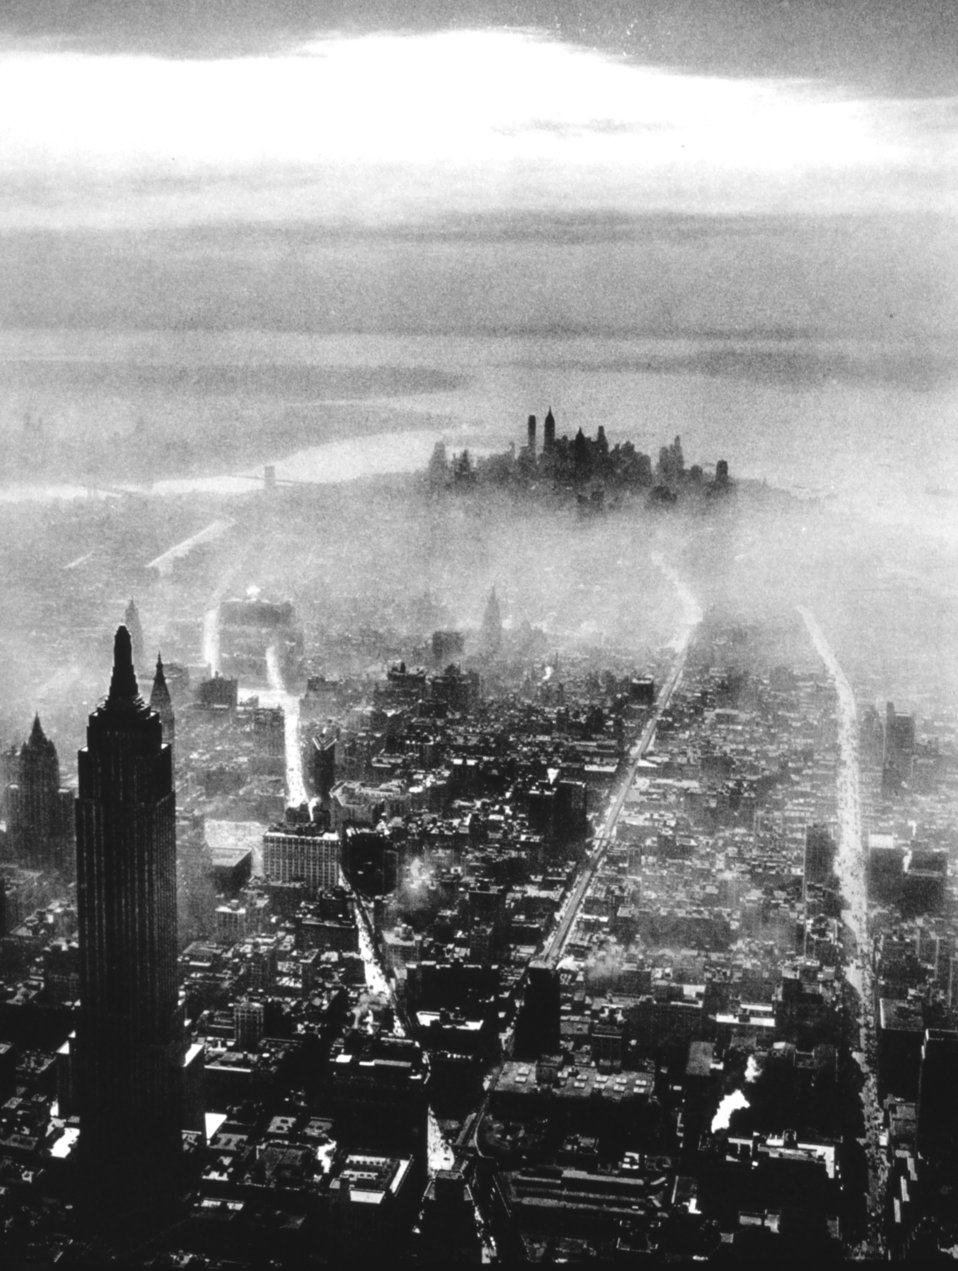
Early morning mist over New York City. Captain Alfred G. Buckham. In: 'Flug Und Wolken', Verlag F. Bruckmann, Munchen, 1932.